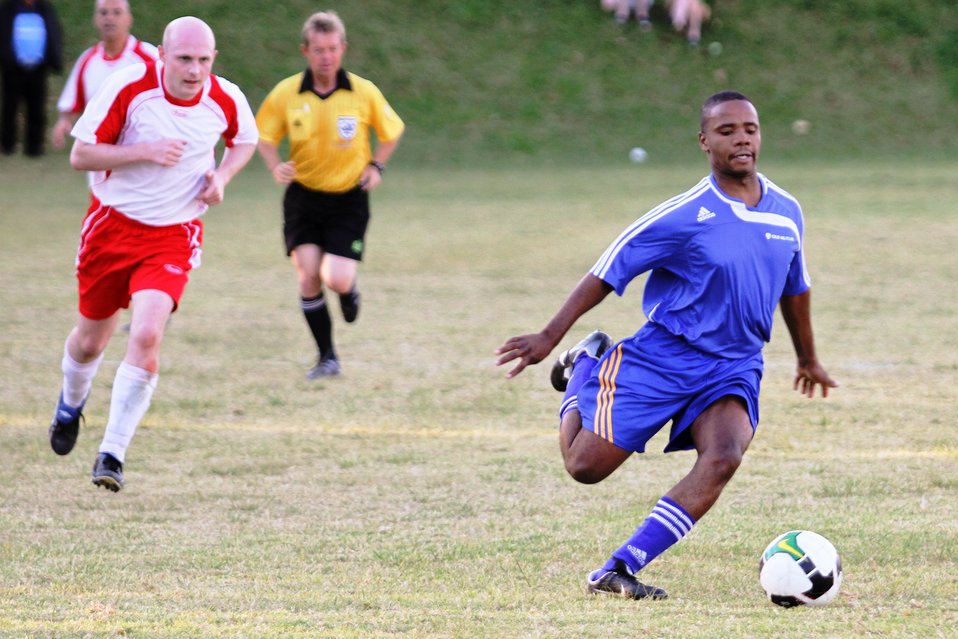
U.S. Embassy Pretoria Plays the British High Commission

The U.S. Embassy Pretoria plays the British High Commission in a match on May 28, 2010, in Pretoria, South Africa. The match was part of a series of challenge events aimed at building the friendly rivalry and excitement before the World Cup match between the U.S. National Team and the England National Team in Rustenburg, South Africa, on June 12, 2010.